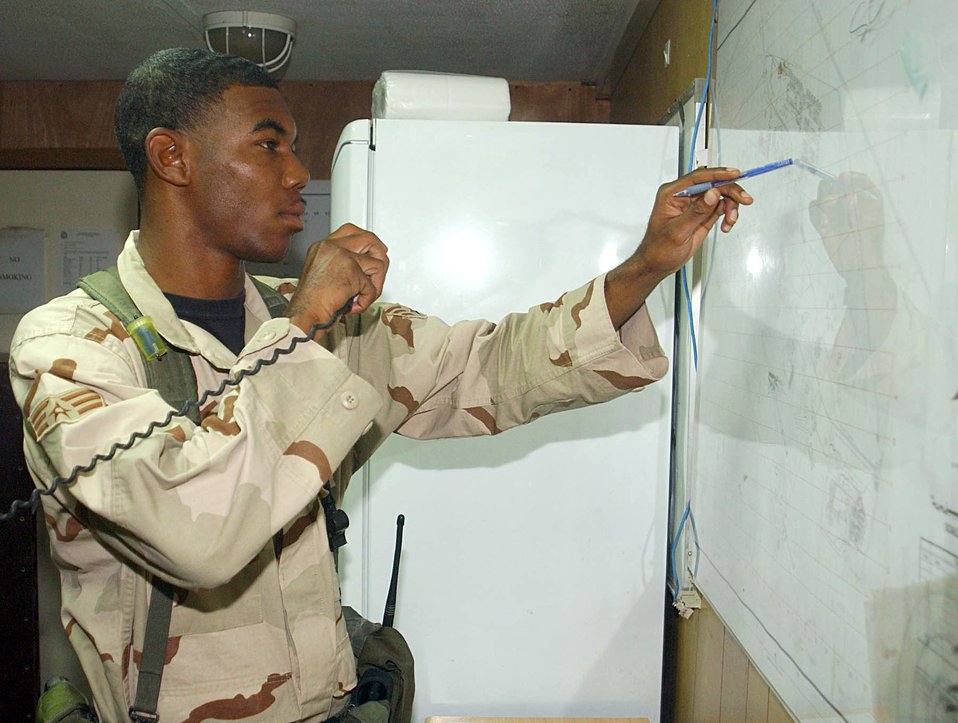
Checkin' things out

SOUTHWEST ASIA (AFPN) -- Senior Airman Donneil Perryman monitors the status of security patrols he dispatched at this forward-deployed location. Airman Perryman deployed from Davis-Monthan Air Force Base, Ariz.